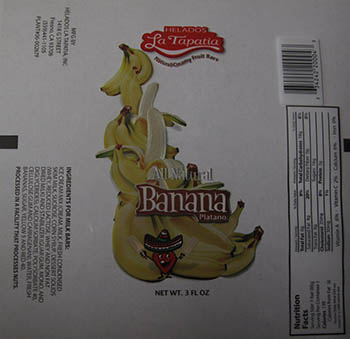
RECALLED – Ice cream products

March 19, 2014 – Product Recall – Helados La Tapatia, Inc. Recalls Products Because of Possible Health Risk.